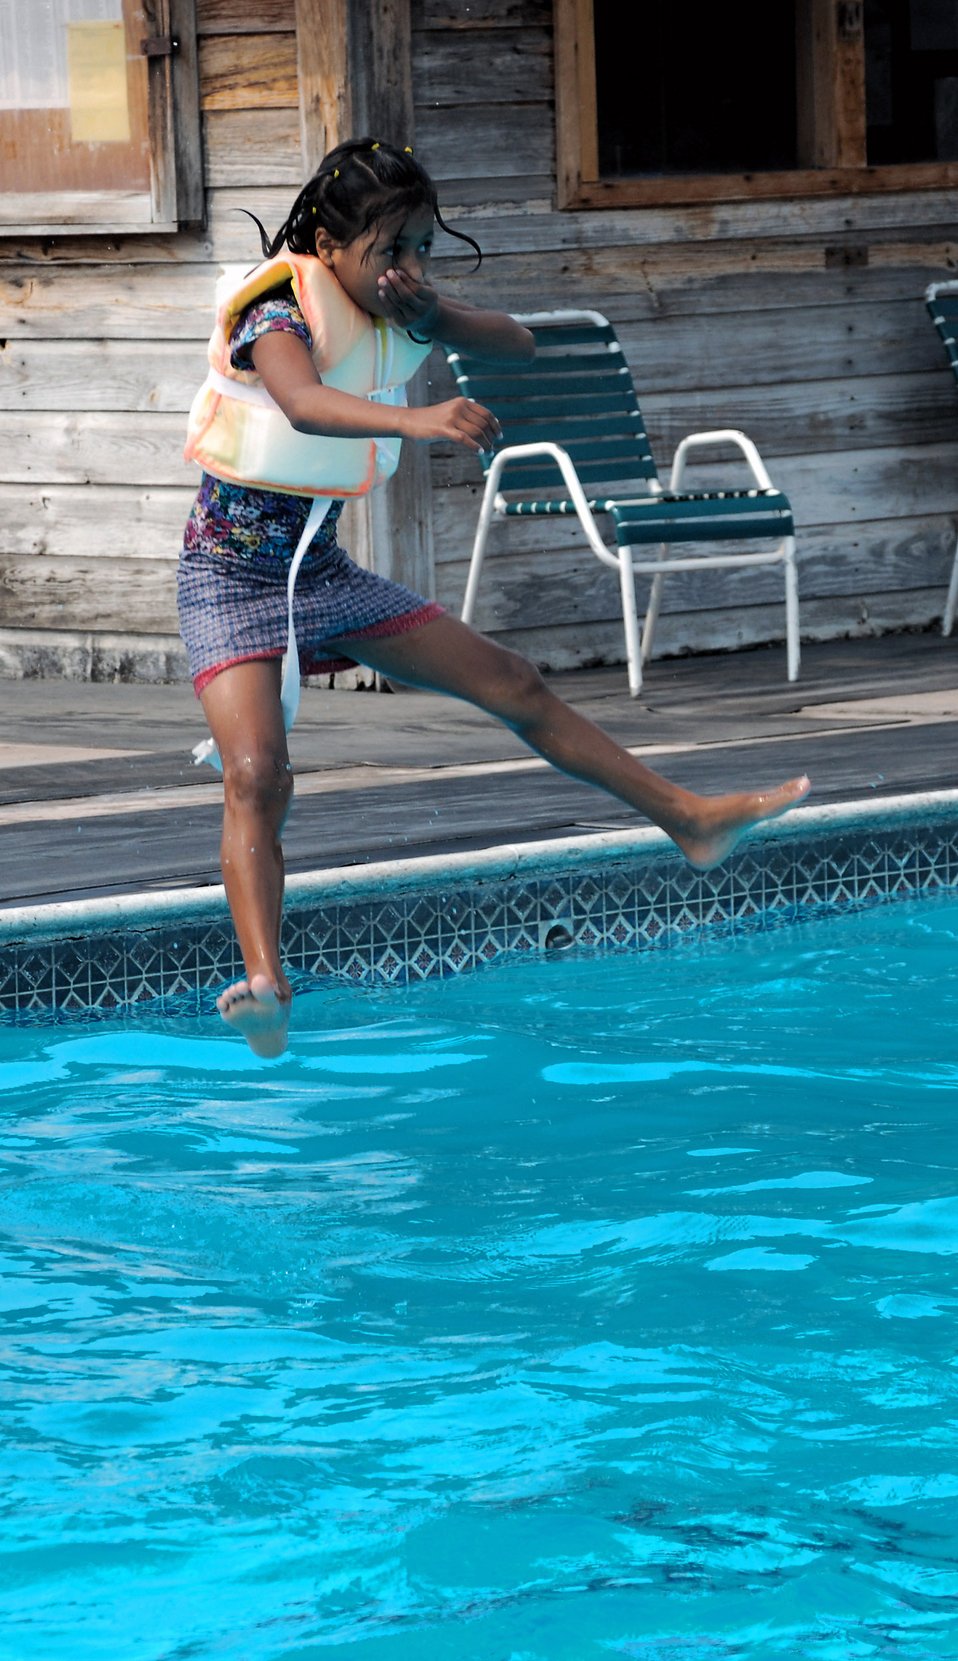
Airmen in Honduras host special day for local children

A girl from the Hogar de Guadalupe Orphanage jumps into the pool during a kids' day May 18 at Soto Cano Air Base, Honduras. About 40 volunteers from the 612th Air Base Squadron spent the day playing games and interacting with the children.